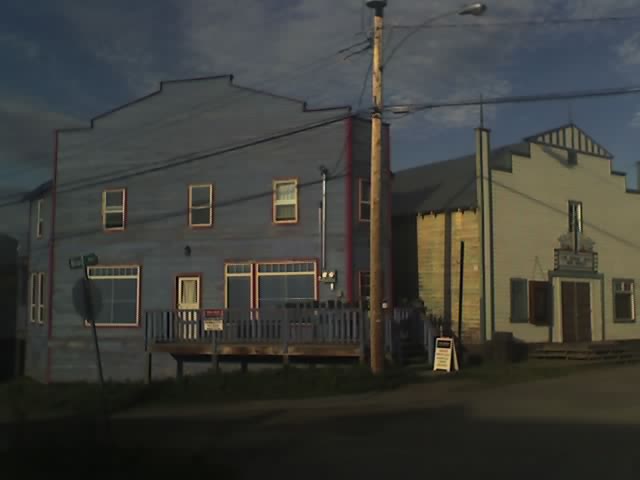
Commercial buildings in Wells, Sunset Theatre at right